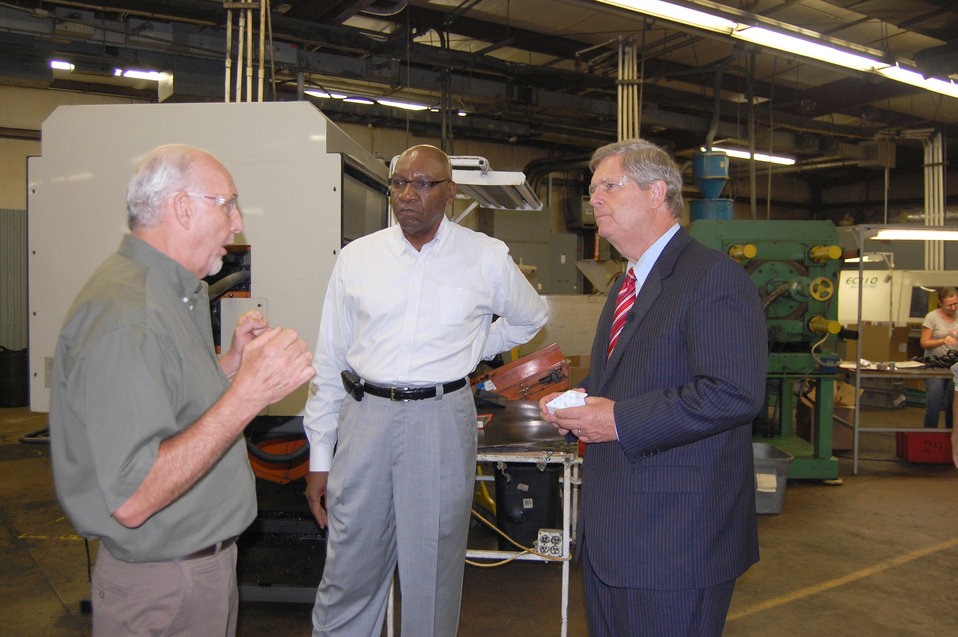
Agriculture Secretary Tom Vilsack (right) and Tarheel Plastics President Jerry Camp (center) listen to Tarheel Plastics Plant Manager Kip Tobey (left) explain the molding process for the different components for dishwashers at the Tarheel Plastics Plant in Lexington, NC., on Friday, Sept. 7, 2012. Tarheel Plastics produces components for automobiles and a wide variety of household appliances, supplying parts to companies such as Frigidaire and Electrolux. The company is certified as a minority business enterprise (51 percent minority owned) and recently received a U.S. Department of Agriculture (USDA) Rural Development (RD) business loan guarantee that allowed them to refinance.